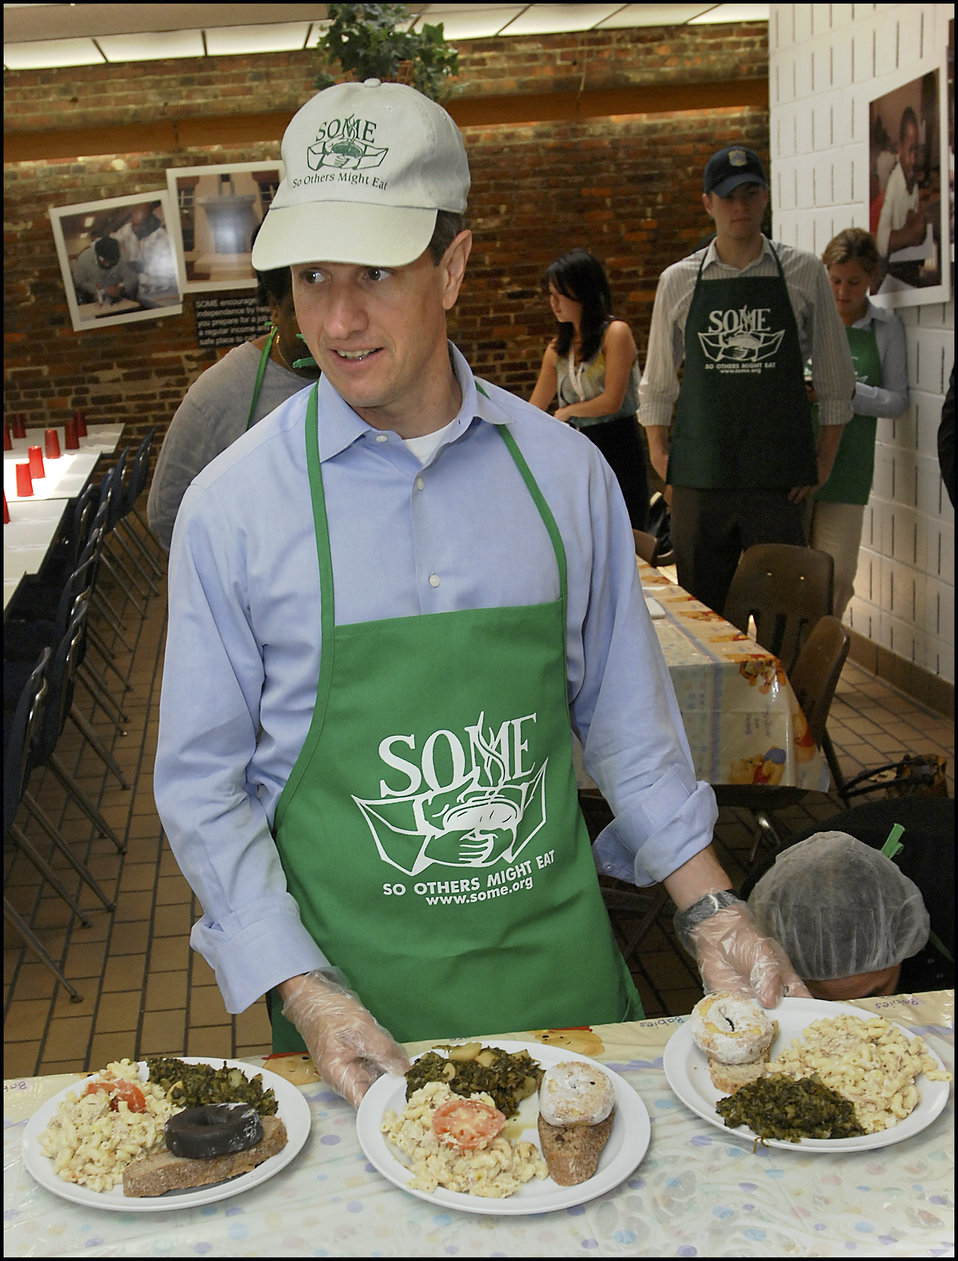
United We Serve at SOME: June 25, 2009

Secretary Geithner serving food to Washington DC’s hungry and homeless at So Others Might eat (SOME), as part of the Obama Administration’s “United We Serve” summer service initiative on June 25, 2009.